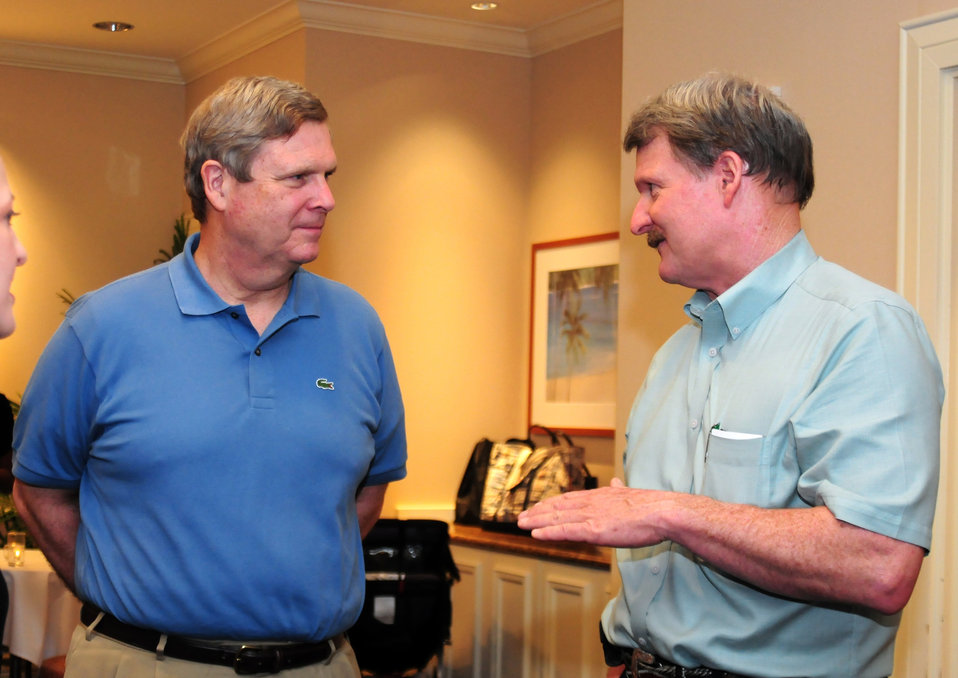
Agriculture Secretary Tom Vilsack (left) chats with California Farm Bureau President Paul Wenger while attending the California Farm Bureau Federation event at the Hilton Hawaiian Village, Waikiki, Hawaii, on Sunday, January 8, 2012.